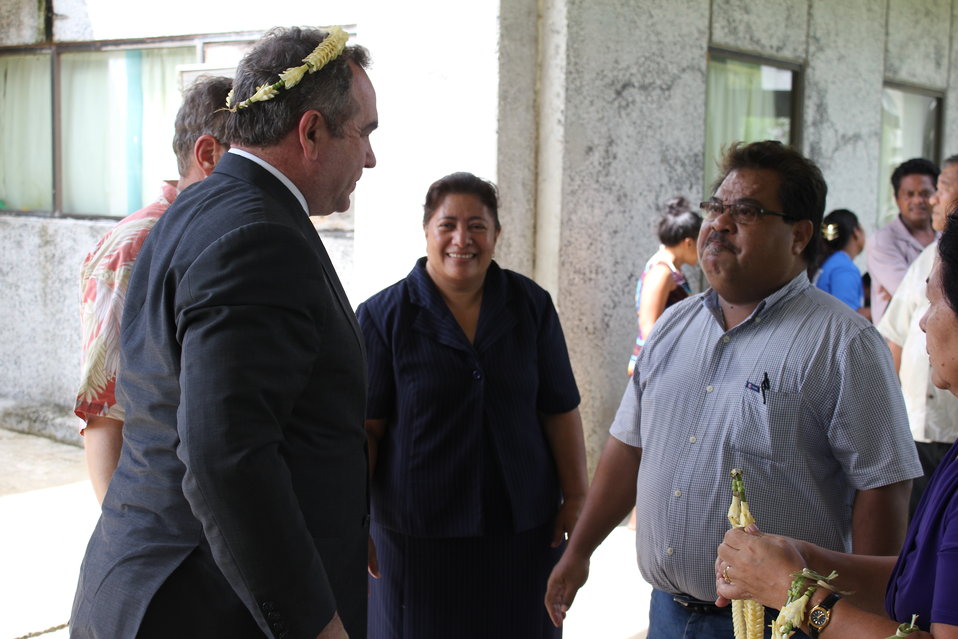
Assistant Secretary Campbell Is Greeted By Pohnpei State Governor Ehsa and Dr. Keller

Assistant Secretary of State for East Asian and Pacific Affairs Kurt Campbell is greeted by Pohnpei State Governor John Ehsa, right, and Director of Health Services Dr. Elizabeth Keller, center, at the Pohnpei State Public Hospital in Palikir, Pohnpei, on July 1, 2011.